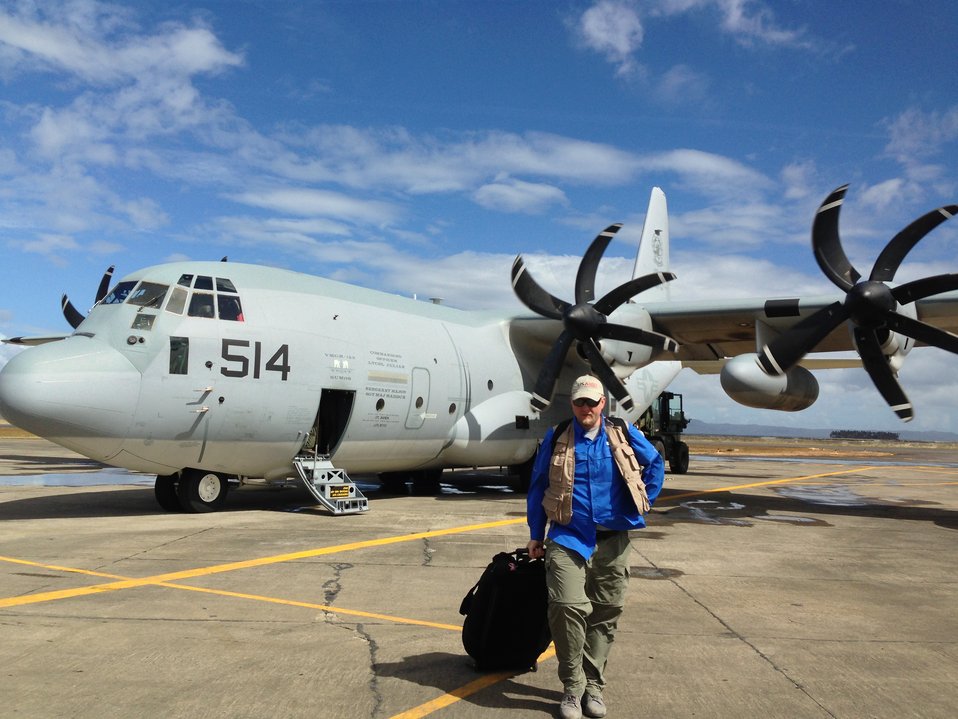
USAID Deputy DART Leader Arrives in Tacloban

USAID Deputy Disaster Assistance Response Team (DART) leader Ben Hemingway steps off a U.S. military C130 flight in Tacloban, currently among the only ways to reach the hard-hit region, on November 16, 2013. Hemingway was among the first disaster response experts on the ground in Leyte Province.